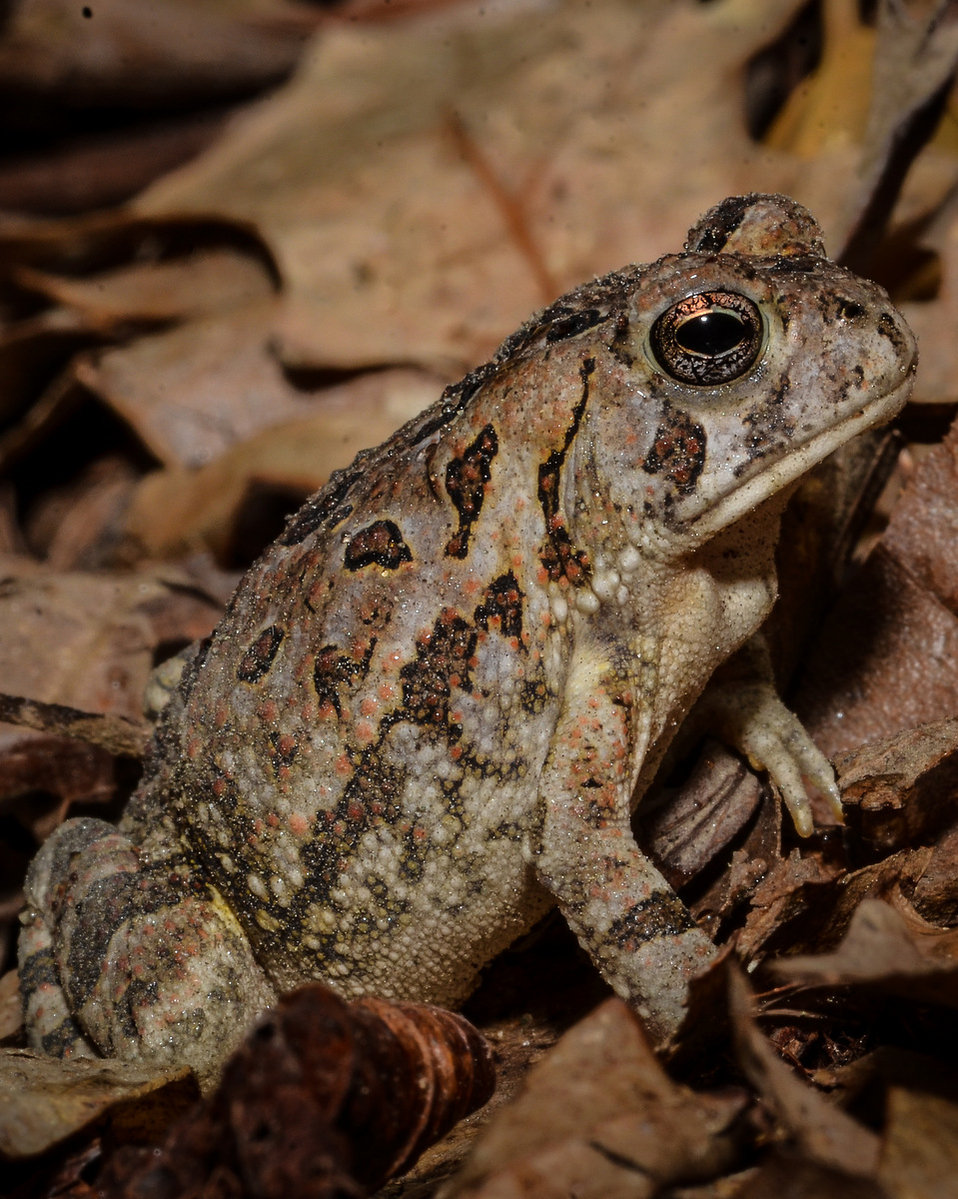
Fowler's toad photographed at Edwin B. Forsythe National Wildlife Refuge.